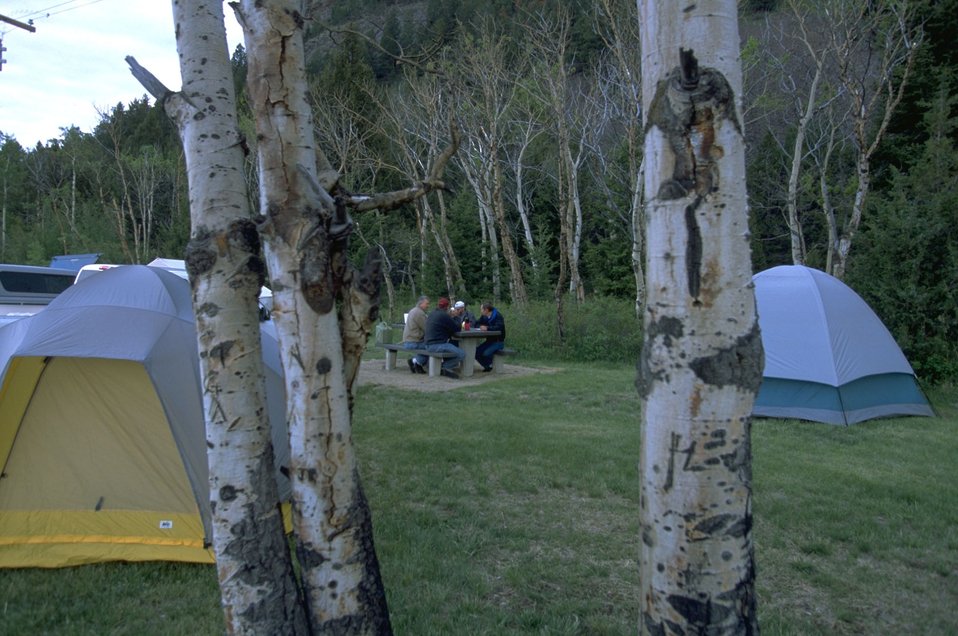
View of campers between birch trees at Divide Campground